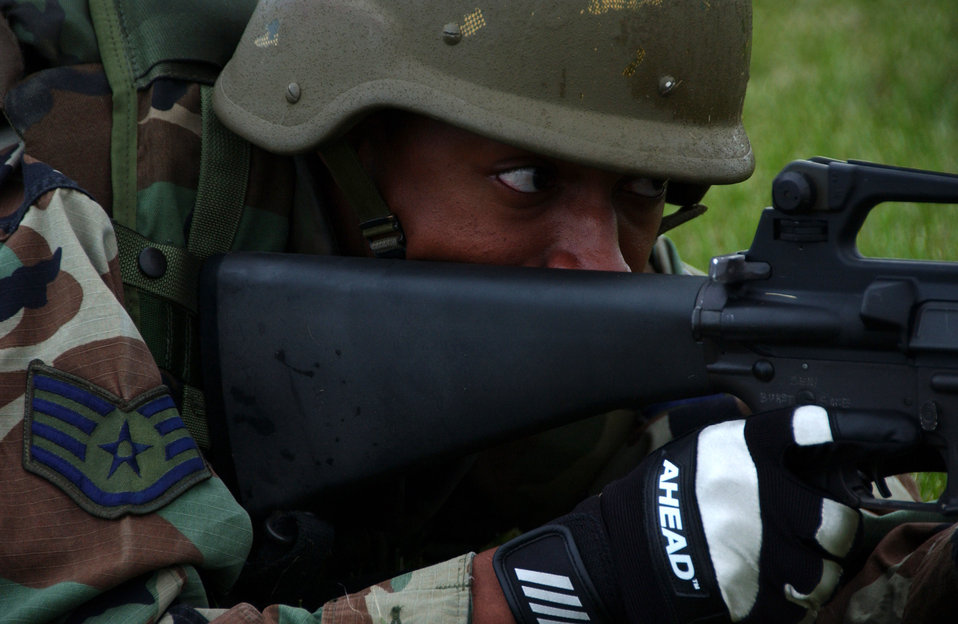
Air warriors train for deployment

Staff Sgt. Joshua Brantly takes aim down range during combat skills training Aug. 3 at Eielson Air Force Base, Alaska. This training gives Airmen the necessary skills to perform and adapt in a combat environment while deployed. Sergeant Brantly is assigned to the 354th Logistic Readiness Squadron.